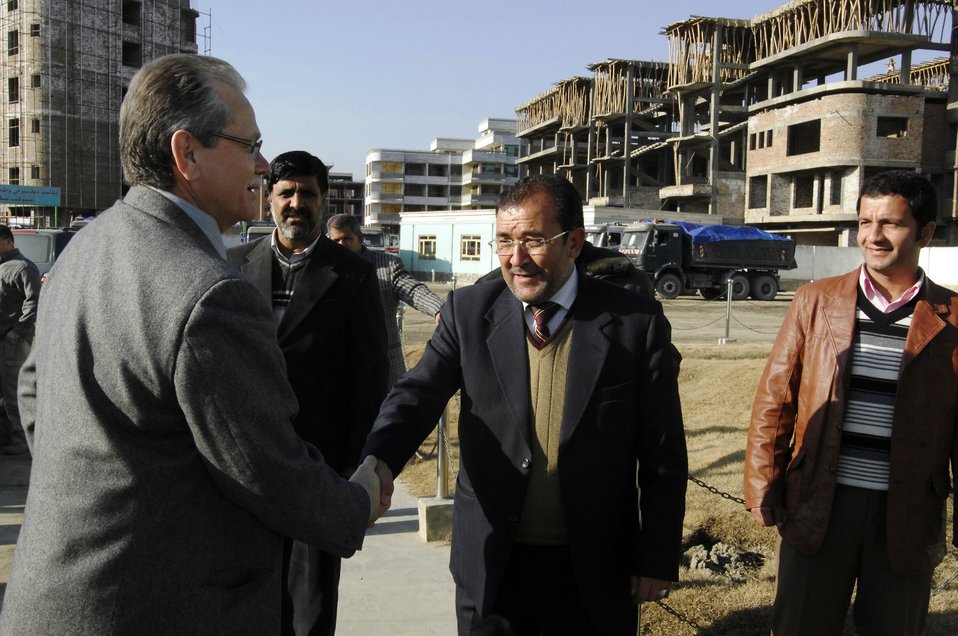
Care72